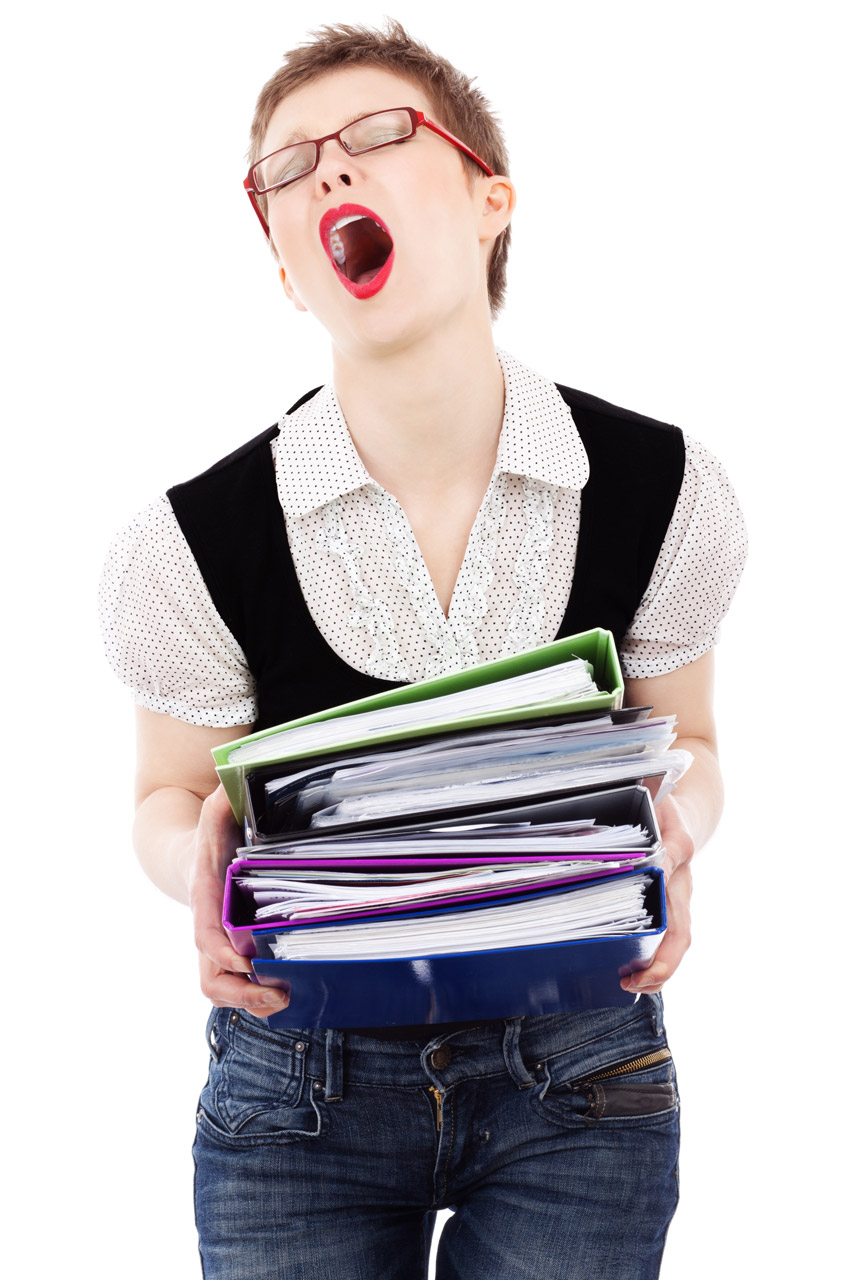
Overwhelmed employee

Young woman screaming under workload - jana svojsova.